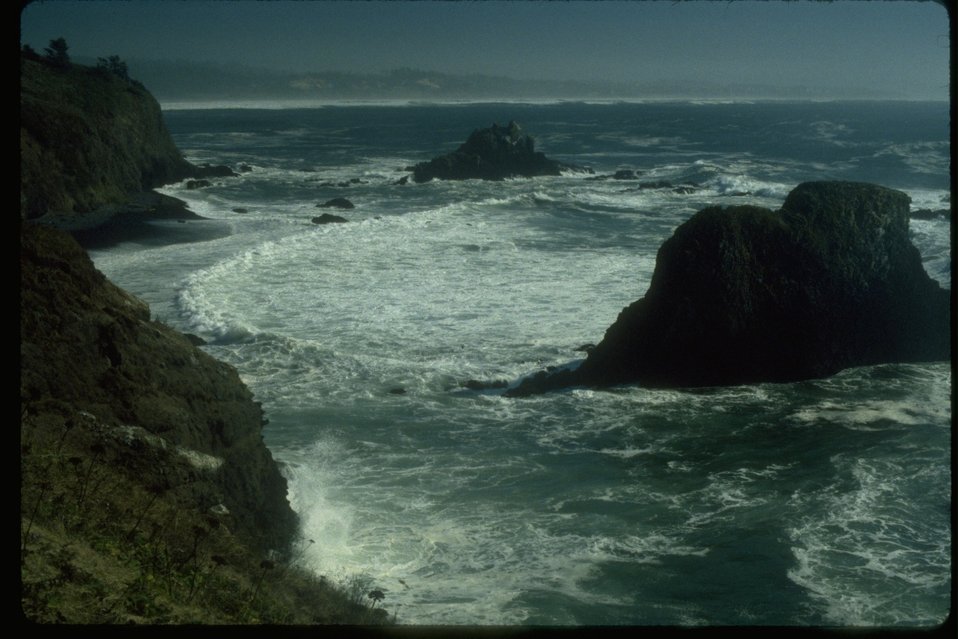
Lions Head Rock near Yaquina Head ONA.